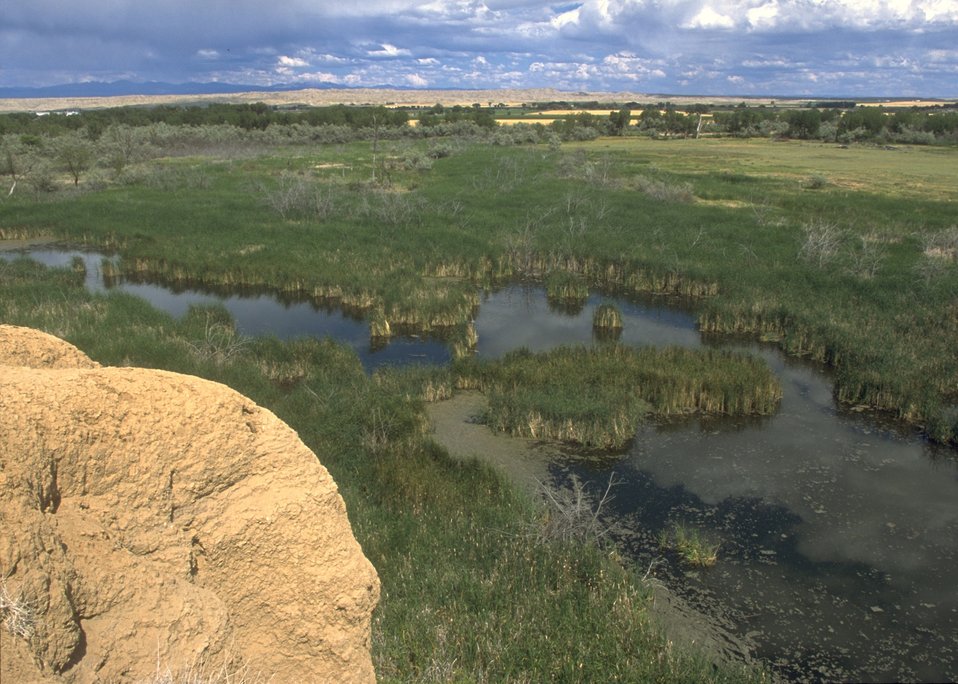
Duck Swamp Interpretive Area, Worland Field Office.